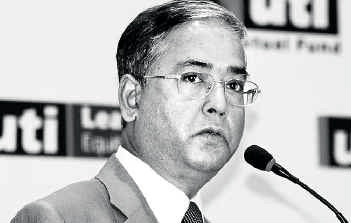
U. K. Sinha, CMD of the Unit Trust of India Asset Management Company. Photograph taken during a press event.